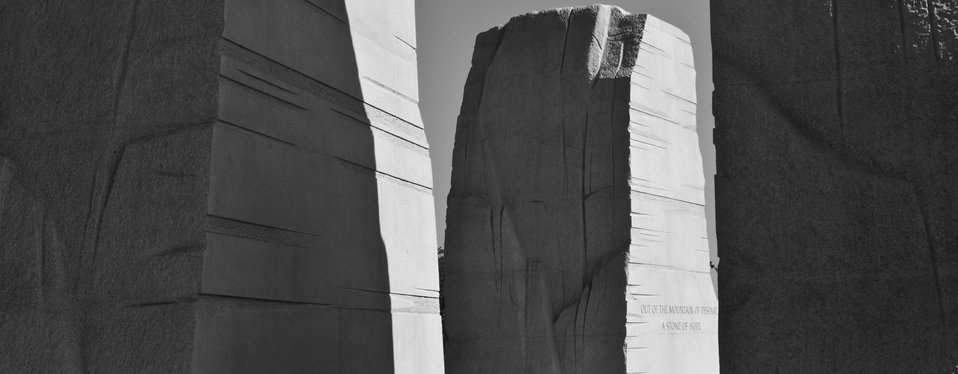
Martin Luther King, Jr. Memorial in Washington, DC, on Saturday, Oct. 8, 2011.